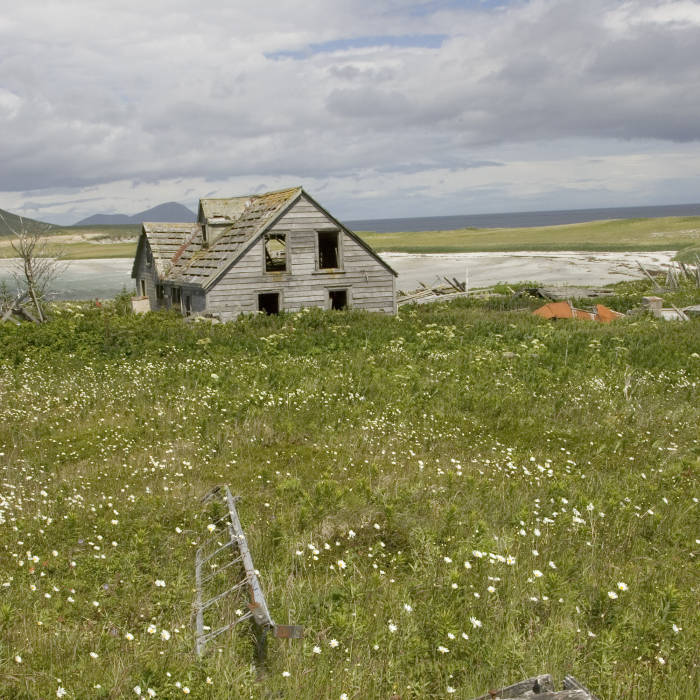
Simeonof Island

Alaska Maritime National Wildlife Refuge